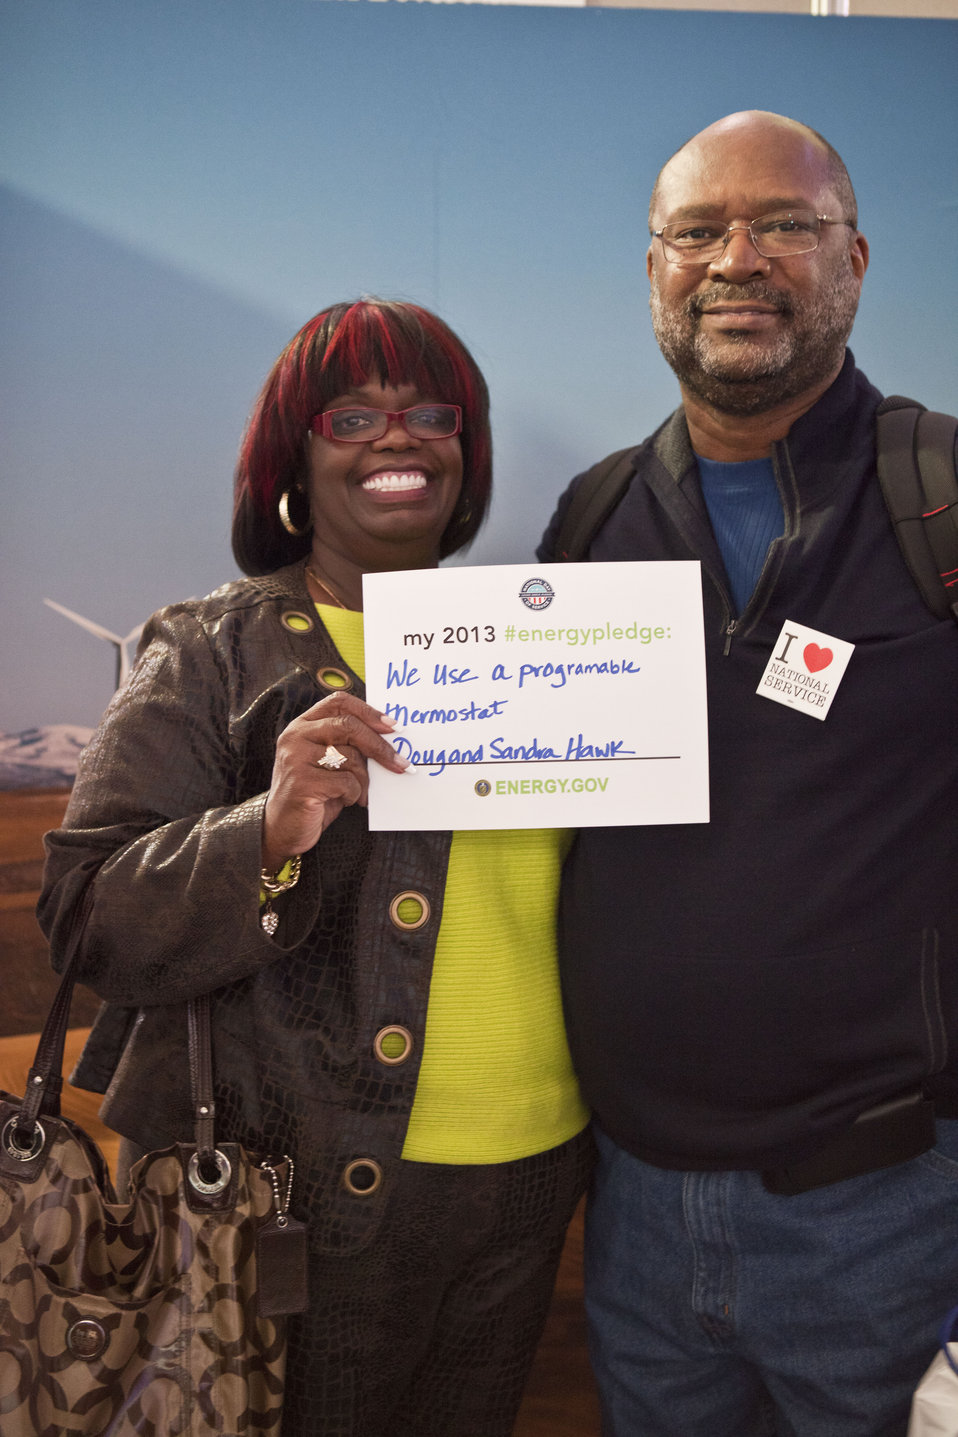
What's your #energypledge?